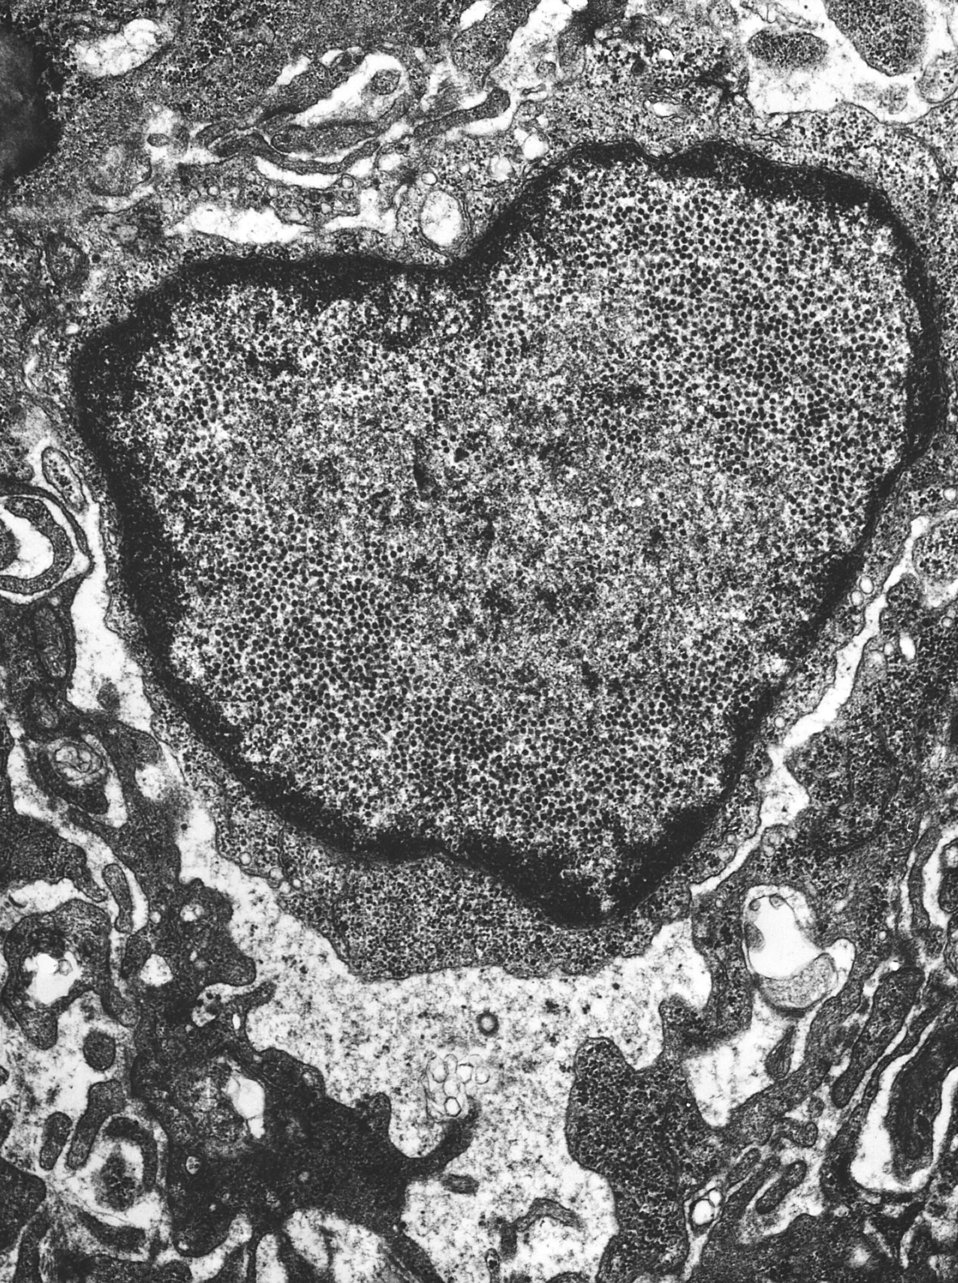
This transmission electron micrograph (TEM) revealed the presence of numerous icosahedral-shaped K viruses, each containing an inner, double-stranded DNA genomic core. K viruses are commonly found in humans, as well as other mammal species. This virus affects rodents including rats and mice, and causes pneumonia in very young mice.